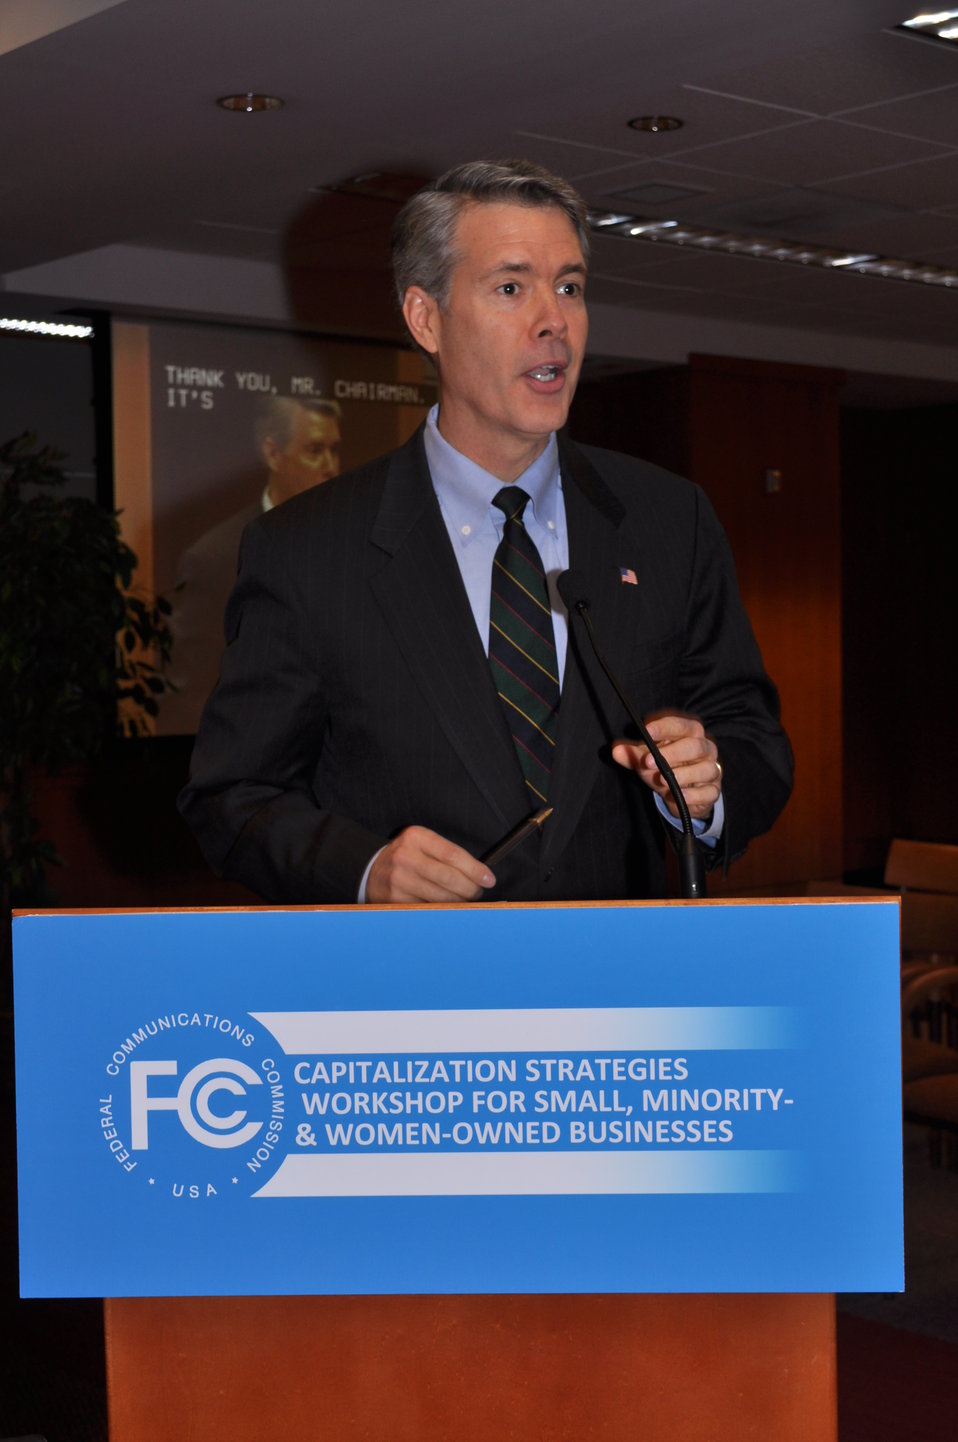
Capitalization Strategies

Workshop for small, minority and women owned businesses. Hosted by the Office of Communications Business Opportunities